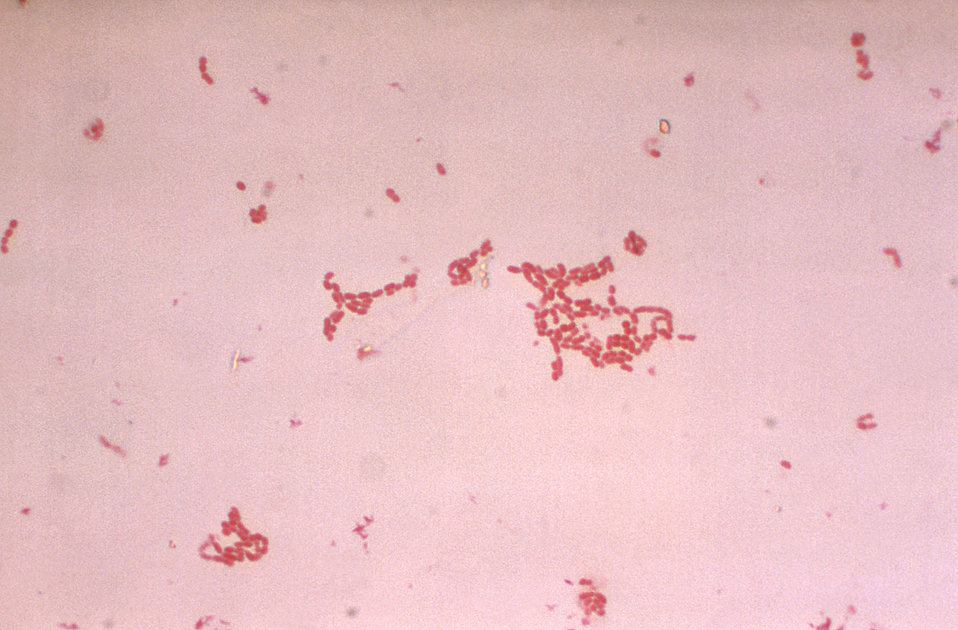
This Gram-stained photomicrograph depicts numerous Gram-negative Acinetobacter calcoaceticus bacterium.